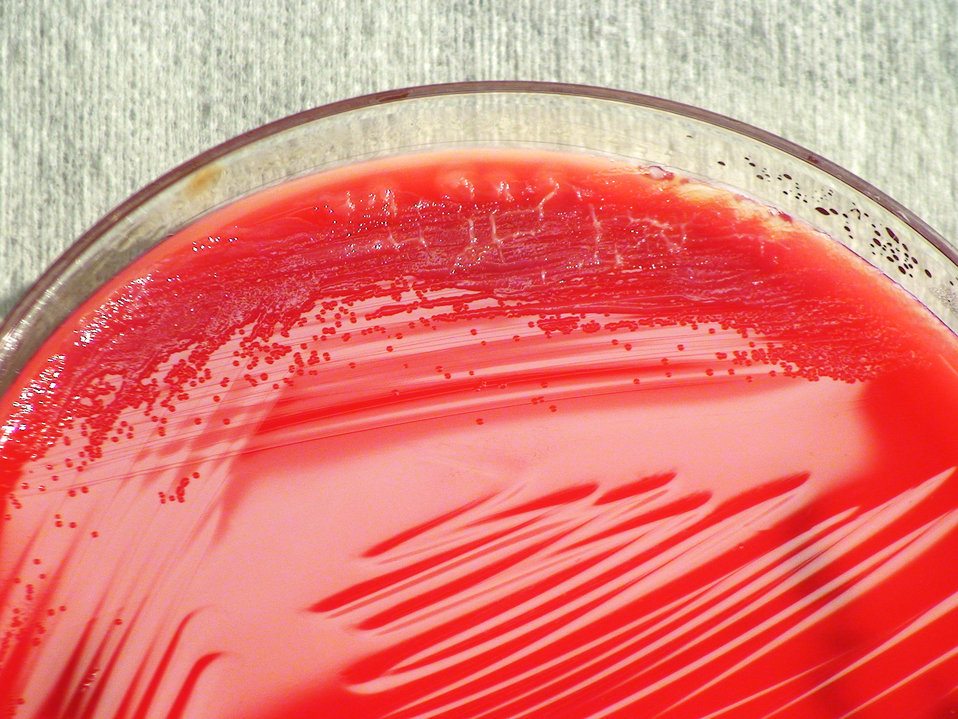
A closer view of PHIL 12459, this photograph depicts the colonial morphology displayed by Gram-negative Pseudomonas monash stutzeri bacteria, which was grown on a medium of sheep's blood agar (SBA), for a 24 hour time period, at a temperature of 37�C.